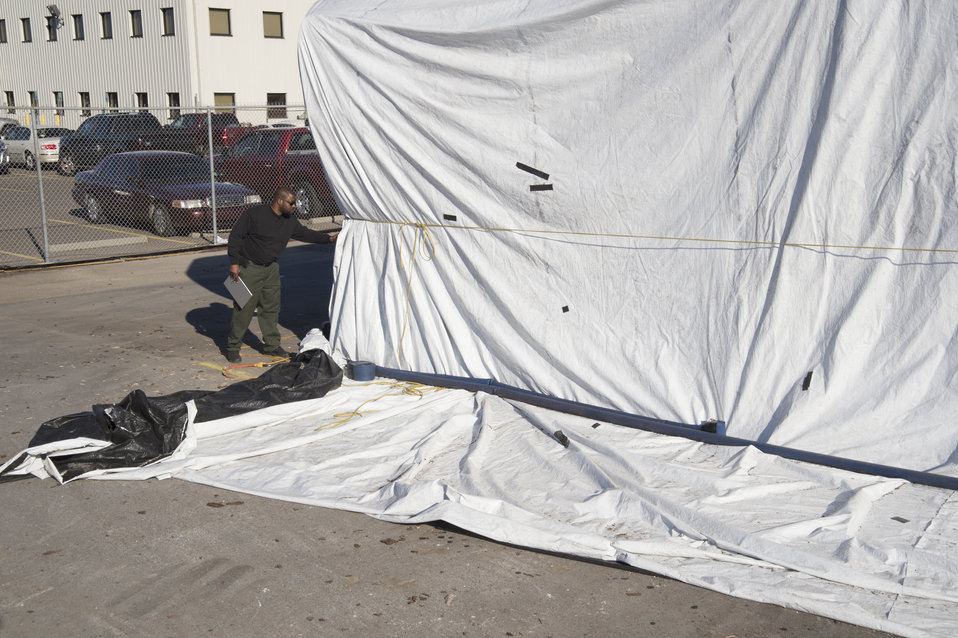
U.S. Department of Agriculture’s (USDA) Animal and Plant Health Inspection Service (APHIS) employee examines the fumigaion tent used on U.S. logs for export near the Port of New Orleans in New Orleans, LA on Wednesday, Nov. 20, 2013. The fumigation process prevents the spread of any bacteria or insect that might cause harm to a foreign country’s agriculture.